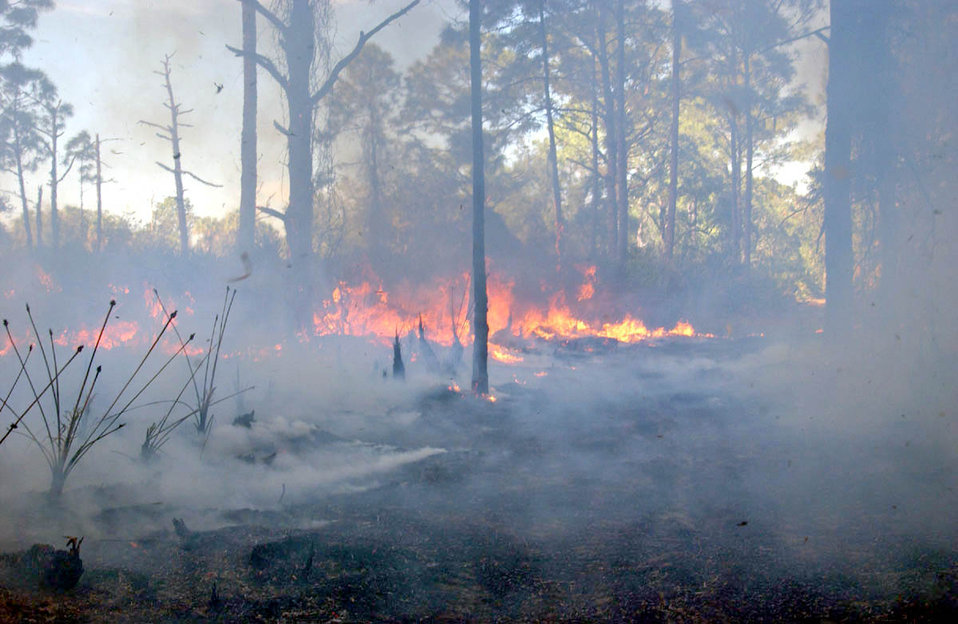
In the heart

MACDILL AIR FORCE BASE, Fla. -- No injuries were reported during the prescribed burn that lasted more than 12 hours.